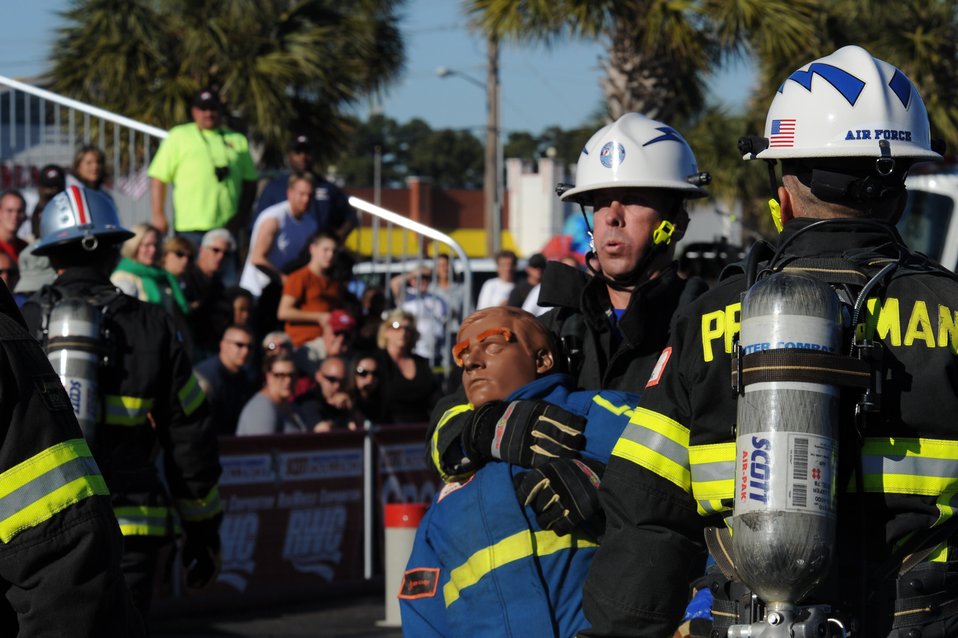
Academy firefighters win 3 world titles

Ken Helgerson